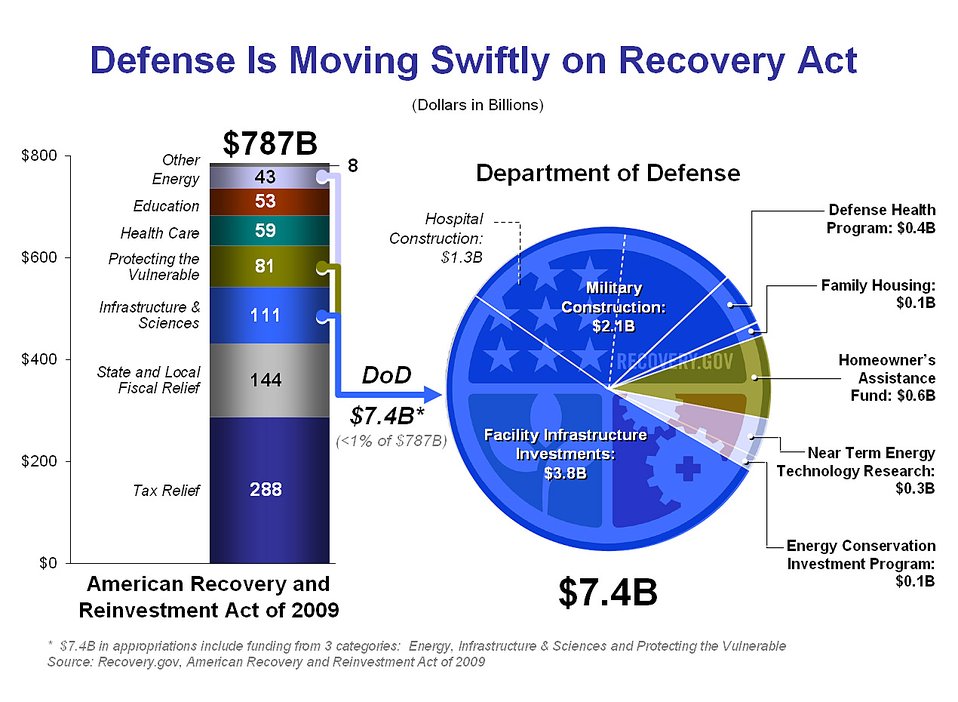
Recovery Act

American Recovery and Reinvestment Act of 2009